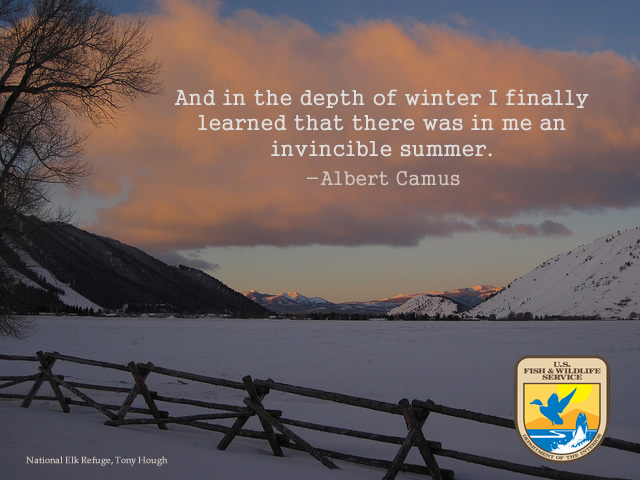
Miller House Sunset

An evening view to the southwest of the historic Miller House on the National Elk Refuge.

Two runs on Jackson's town ski area, Snow King, can be seen on the left of the photo.

Credit: USFWS / Tony Hough, refuge volunteer